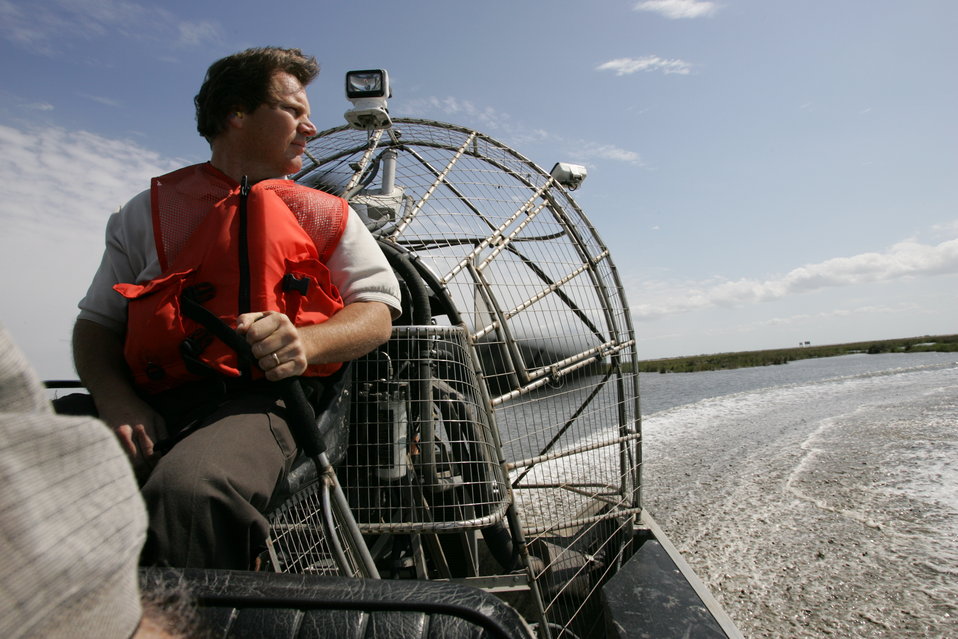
A beautiful day on the water, enjoying work on the refuge.

A Big Branch Marsh National Wildlife Refuge employee pilots an airboat as part of his duties at the refuge.